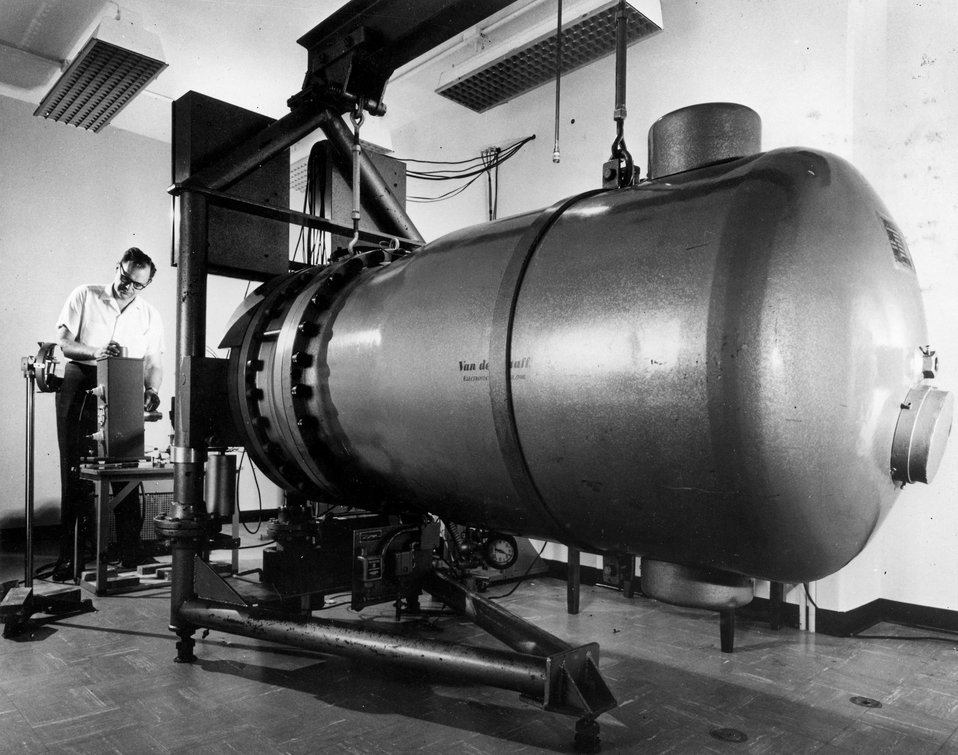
The two million volt Van de Graaff electron accelerator of the Brookhaven Chemistry Department has been modified for pulsed operation. c. 1967